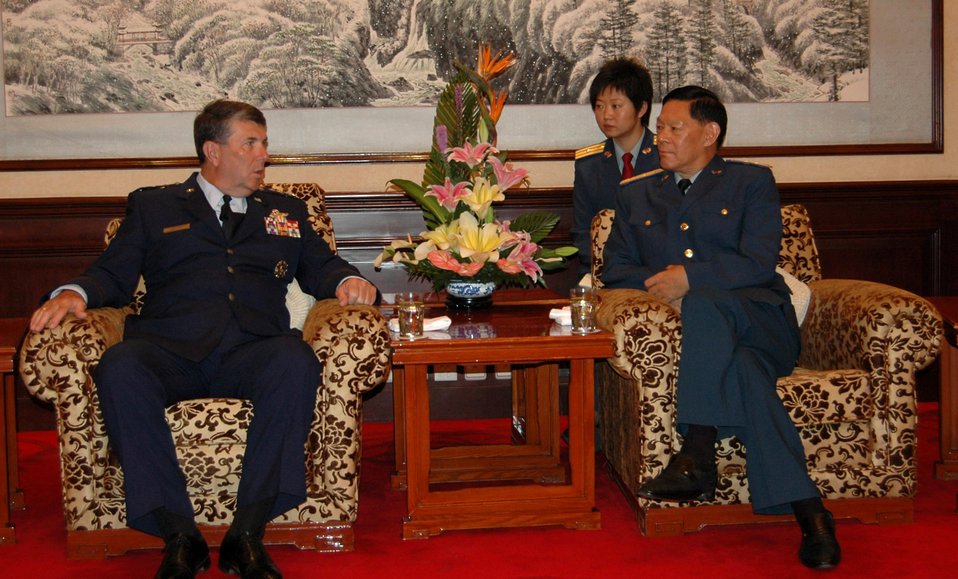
Chinese military hosts PACAF commander

Gen. Paul V. Hester discusses military-to-military engagement with Chinese Gen. Ge Zhenfeng July 24 at the August 1st Building of the General Staff Command in Beijing. General Hester is the commander of Pacific Air Forces, and General Zhenfeng is the deputy chief of the General Staff Command, People's Liberation Army. Maj. Yao Rong of the People's Liberation Army Air Force provides interpretation.